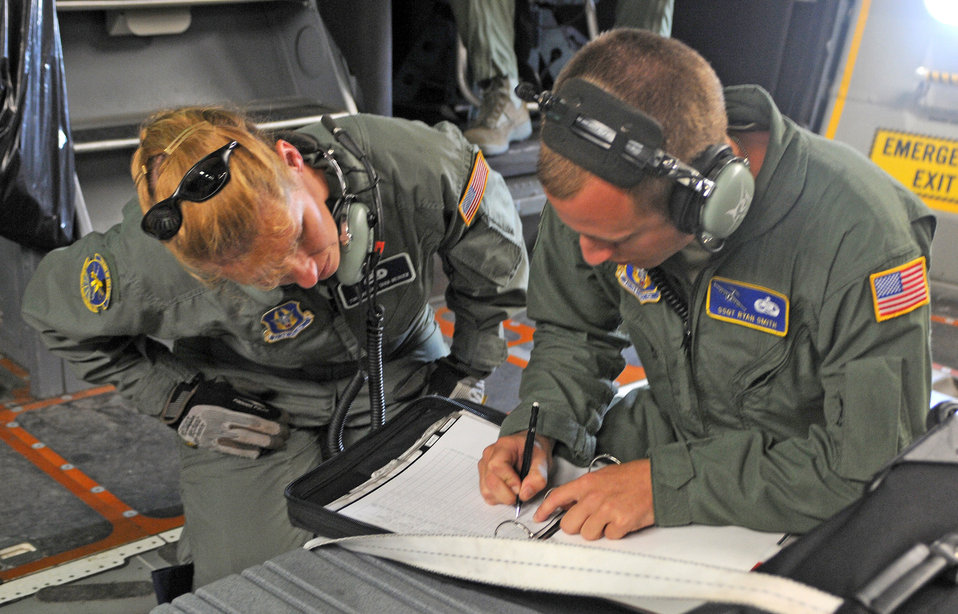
Dover reservists work to form Canadian sister squadron program

Tech. Sgt. Athena Mercer and Staff Sgt. Ryan Smith complete their maintenance checklists onboard a C-17 Globemaster III prior to take off Aug. 22. The two maintainers from the Air Force Reserve Command's 512th Airlift Wing at Dover Air Force Base, Del., were part of a crew going to visit Canadian airmen in the 8 Wing at Canadian Forces Base Trenton in Ontario Aug. 22 through 24. The purpose of the visit was to forge a partnership with the Canadian wing and identify future training opportunities for flying, aerial port operations, airlift control and maintenance procedures.